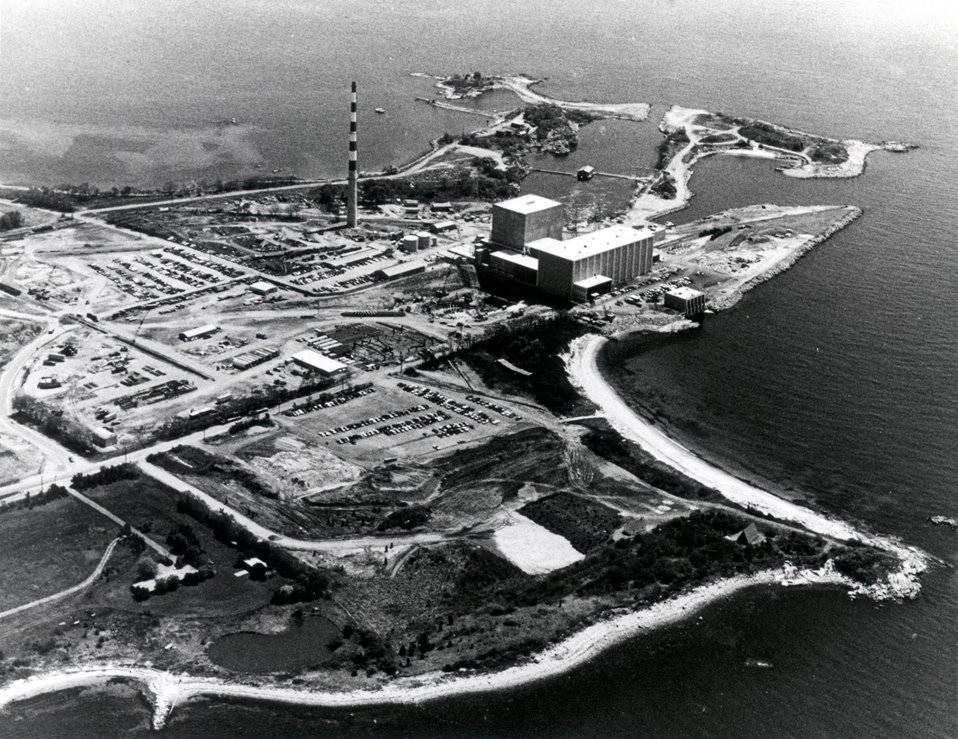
Millstone Nuclear Power Station Unit 1.